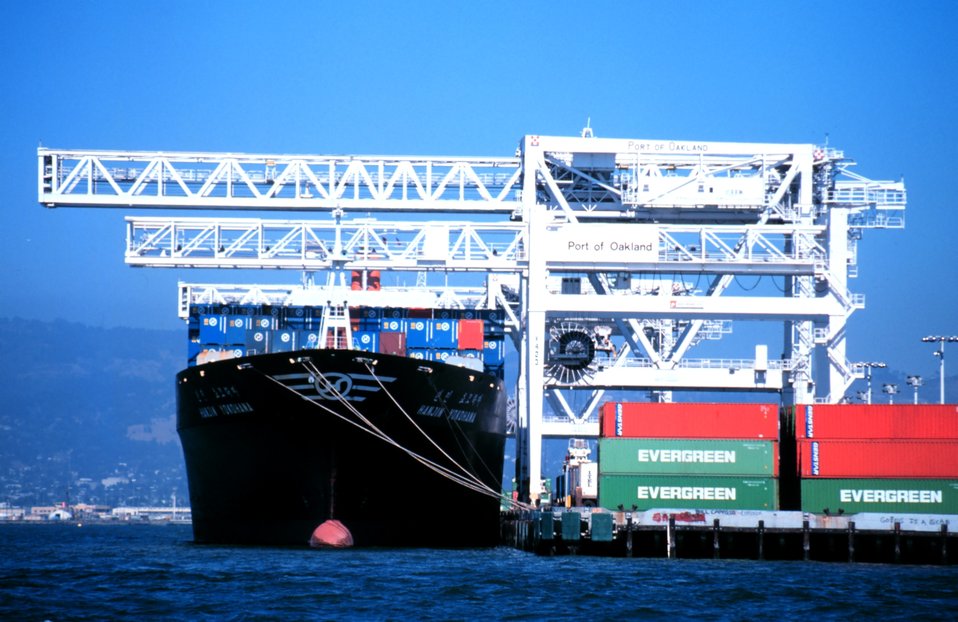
A containership at the Port of Oakland.